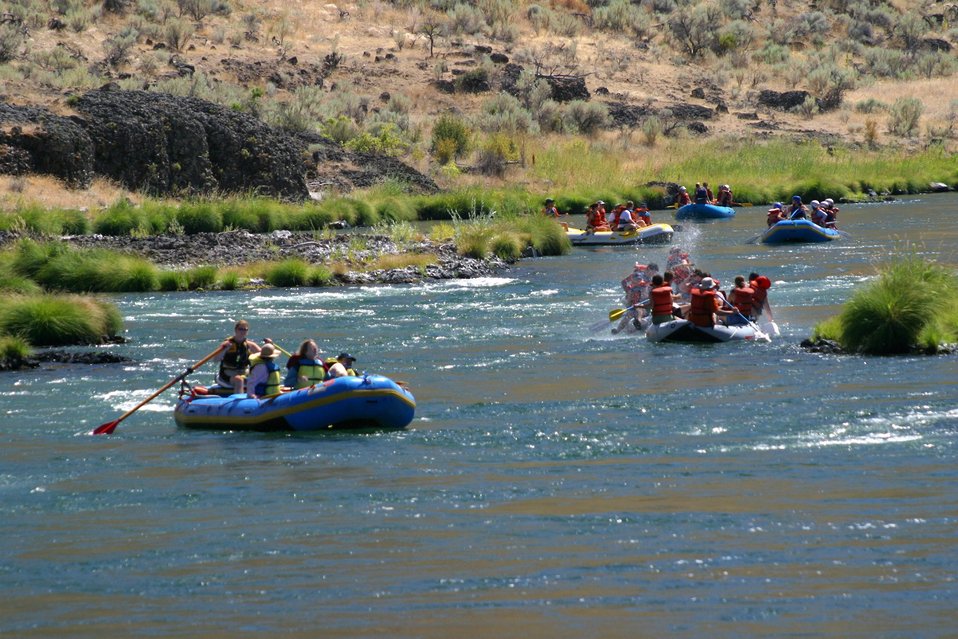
Looking up stream from the Sandy Beach take out.